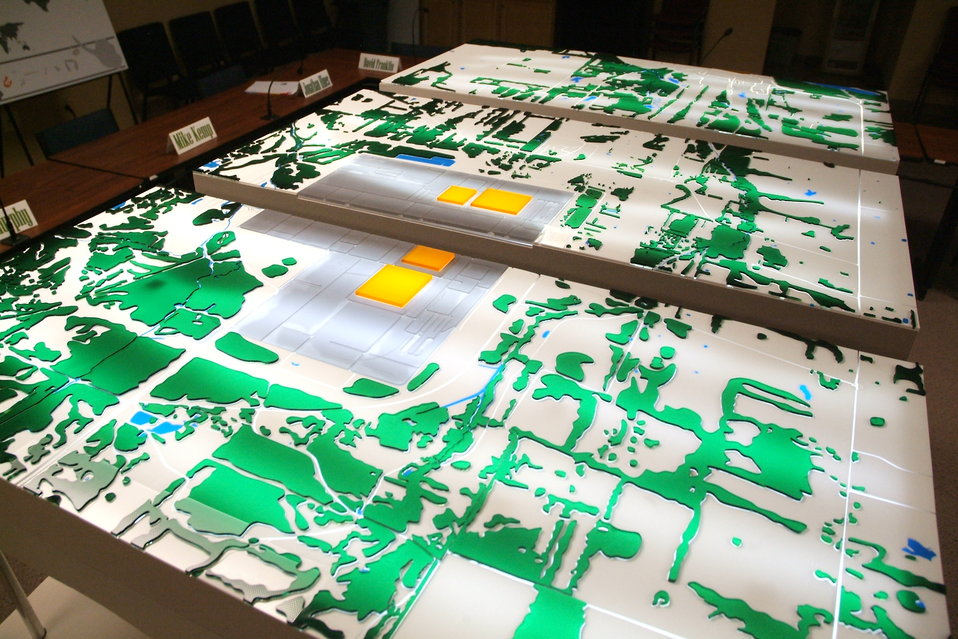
UK Students Imagine DOE’s Paducah Site As Future Technical-Industrial Hub

Shown at the Paducah Citizens Advisory Board office, this model depicts a 10-square-mile area around the Paducah Site to a depth of several hundred feet. Yellow structures depict the site’s four large uranium hexafluoride process buildings.

Over the past year, University of Kentucky students have studied how to preserve, replace, or even build on the more than 3,000 direct and indirect jobs the site currently supports. Future success hinges on interrelated uses such as research and development, education, energy production, manufacturing, and recycling/reclamation, he said.